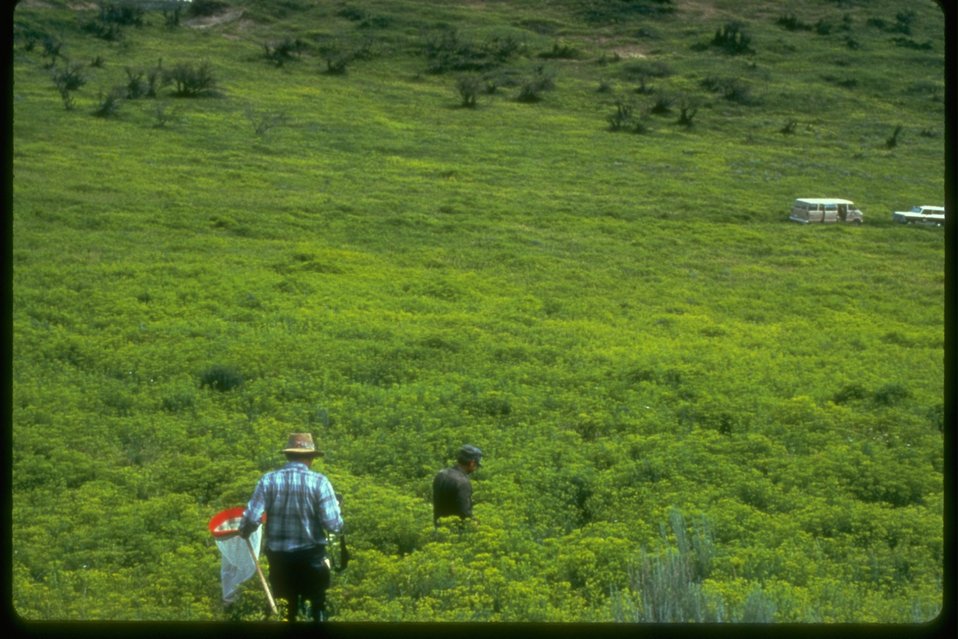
Expanse of leafy spurge in Meeker County.